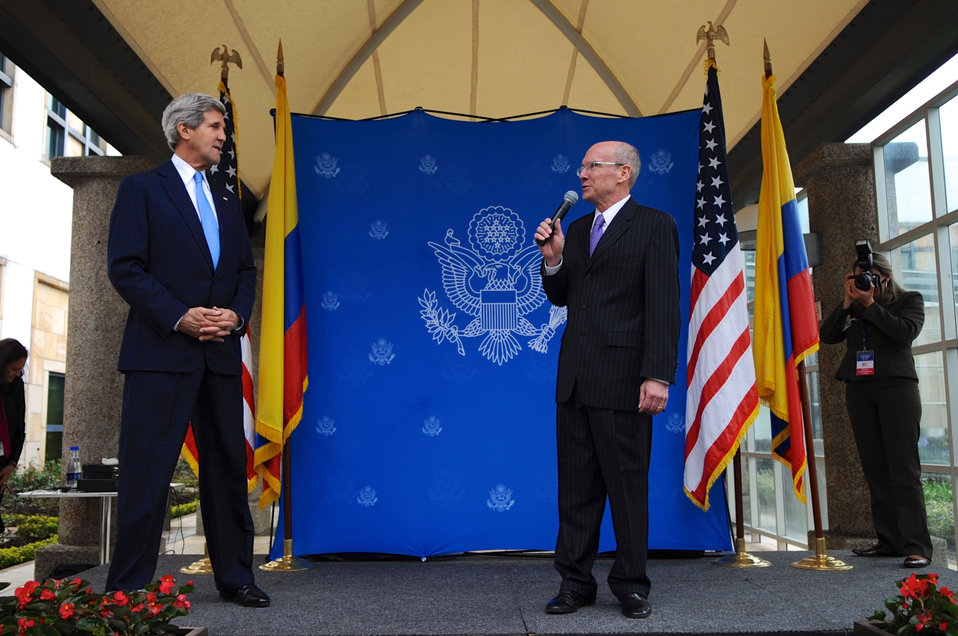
Ambassador McKinley Welcomes Secretary Kerry to Embassy Bogota

U.S. Ambassador to Colombia Michael McKinley introduces U.S. Secretary of State John Kerry before he addressed the staff of the U.S. Embassy in Bogota during a visit to Colombia on August 12, 2013.